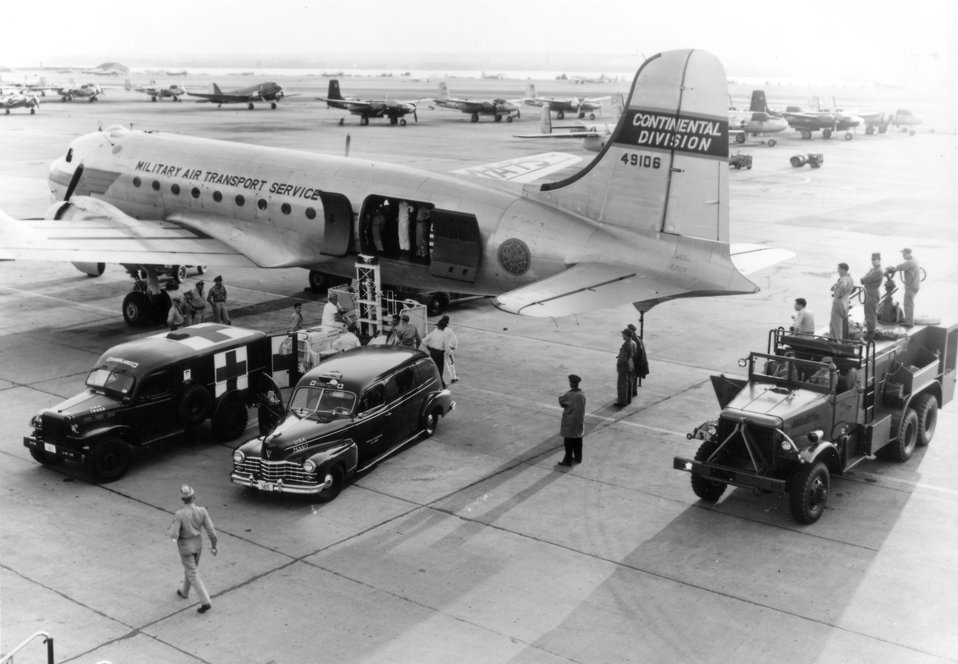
Evacuation of Korean Wounded

1950's -- Evacuation of Korean Wounded -- Korean battle casualities arrive at Bolling Air Force Base, Washington for transfer to Walter Reed Army General Hospital, Washington D.C., September 1950.